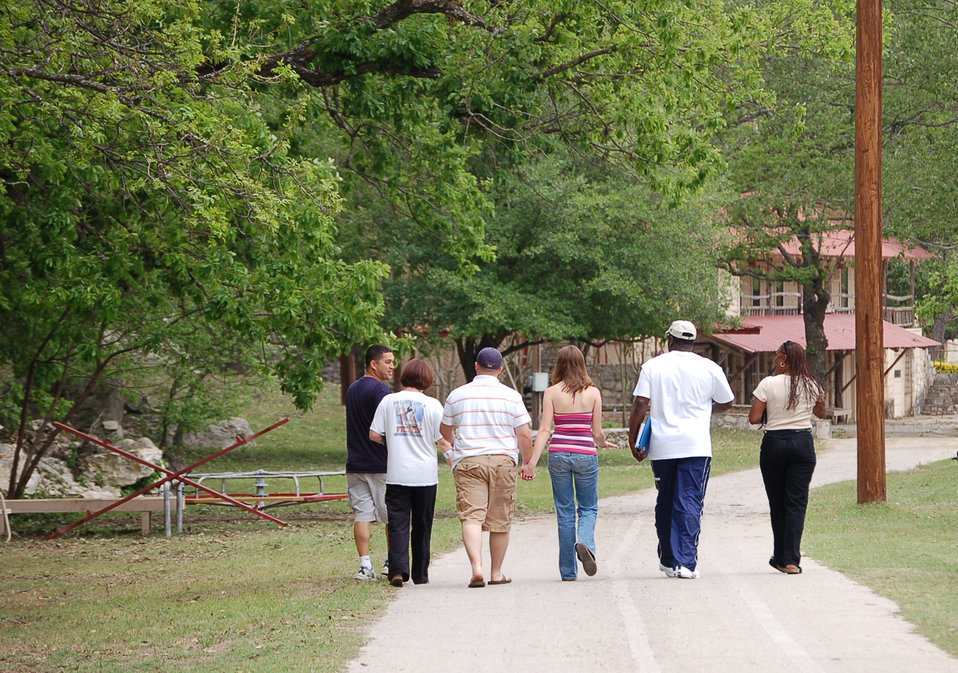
Retreat reconnects couples

(Left to right) Staff Sgt. Jerry Desrochers chats with his wife, Senior Airman Cheryl Desrochers, Senior Airman Aaron and Mellissa Childs and Master Sgt. Don and Tina Taylor as they walk to lunch at the at the Heart of the Hill Camp in Hunt, Texas, on Saturday, April 22, 2006. The three couples had just finished a group session on family separation. All three couples, from Seymour Johnson Air Force Base, N.C., attended a retreat April 20 to 27 hosted by the Military, Veteran and Family Assistance Foundation. The retreat helps couples reconnect after the military spouse returns from a deployment.